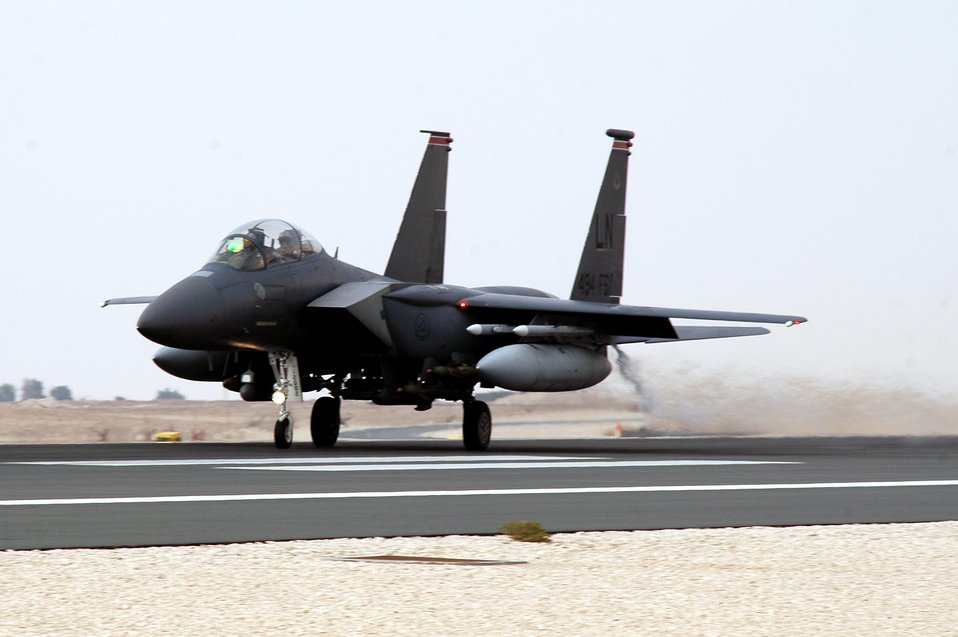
Soaring Eagles

An F-15 Strike Eagle rolls down the runway on takeoff Dec. 11 in Southwest Asia. The F-15s are deployed to the 494th Expeditionary Fighter Squadron in support of Operation Iraqi Freedom. The 494th EFS was the first unit to fly the guided bomb unit 39/B small diameter bomb into combat in October. The new bomb, the first of its kind in the Air Force inventory, gives aircrews the ability to destroy targets that would normally be passed over due to the proximity of friendly troops, civilians, structures or personal property.